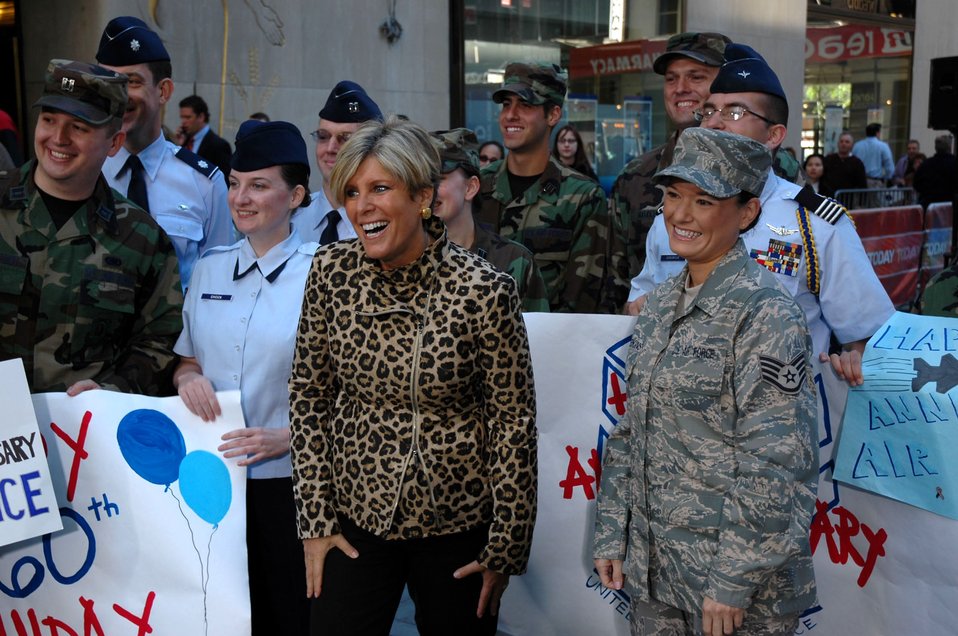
New York City salutes Air Force's birthday

Televison personality and financial adviser Suze Orman wishes the Air Force a happy 60th birthday during taping of the